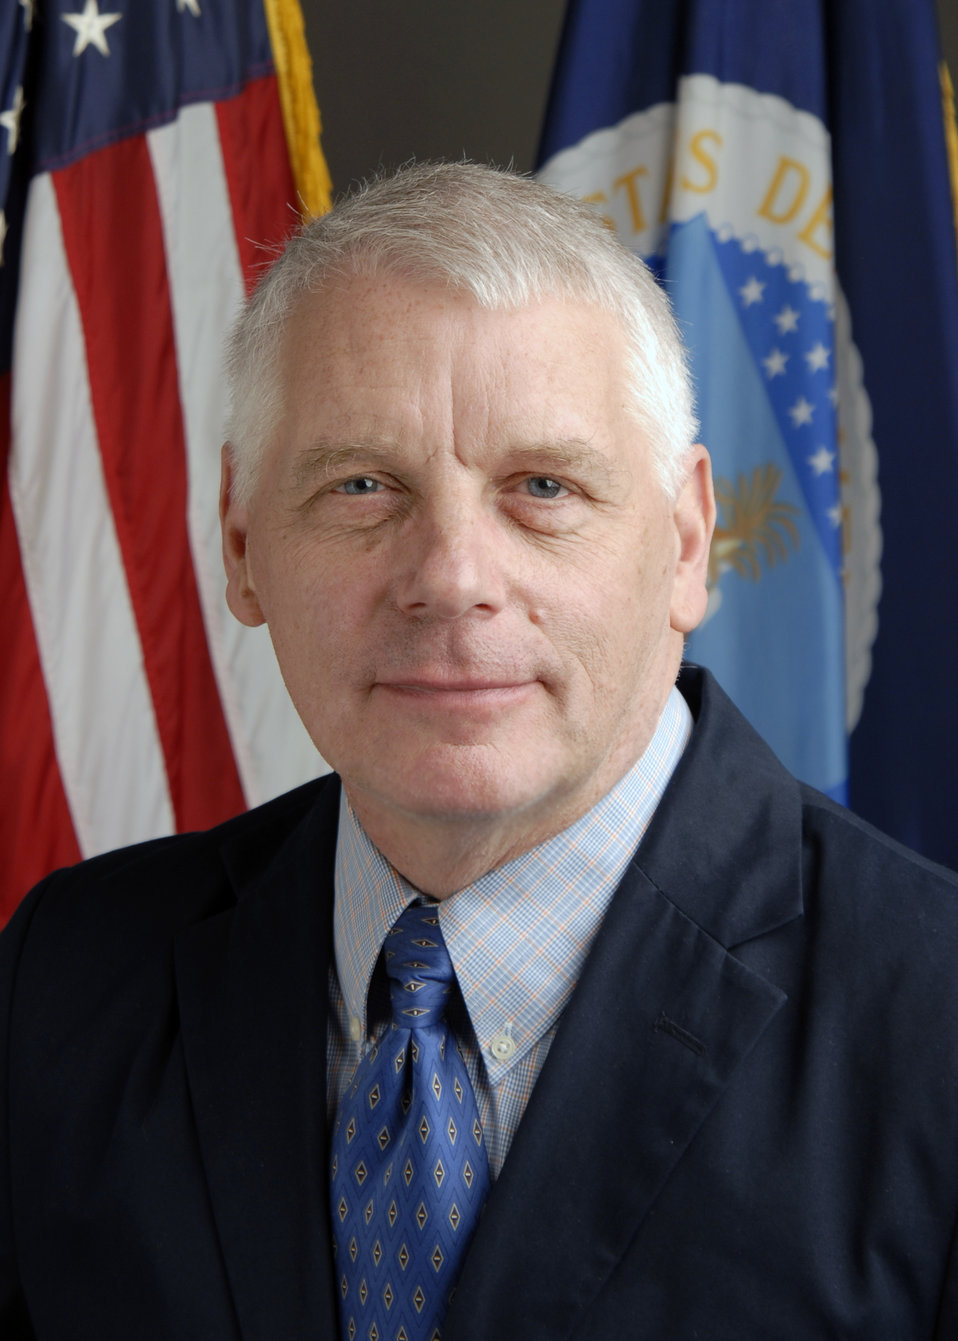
20110603-FSA-KJH-0867 Acting Administrator Farm Service Agency Bruce Nelson

Farm Service Agency Acting Administrator Bruce Nelson.